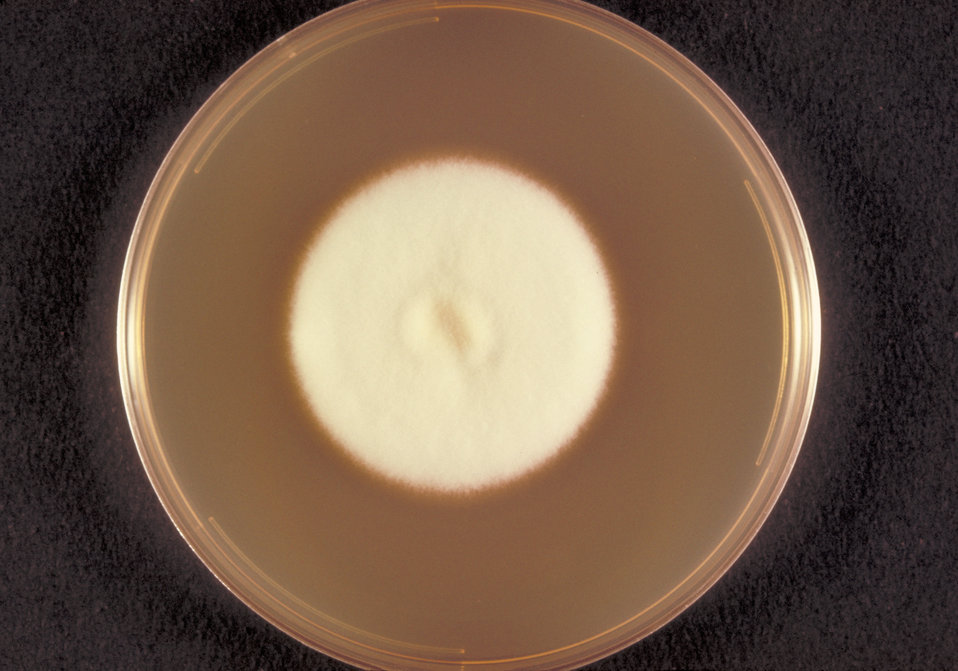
This is a top view of a Sabouraud's dextrose agar plate culture growing Microsporum persicolor.